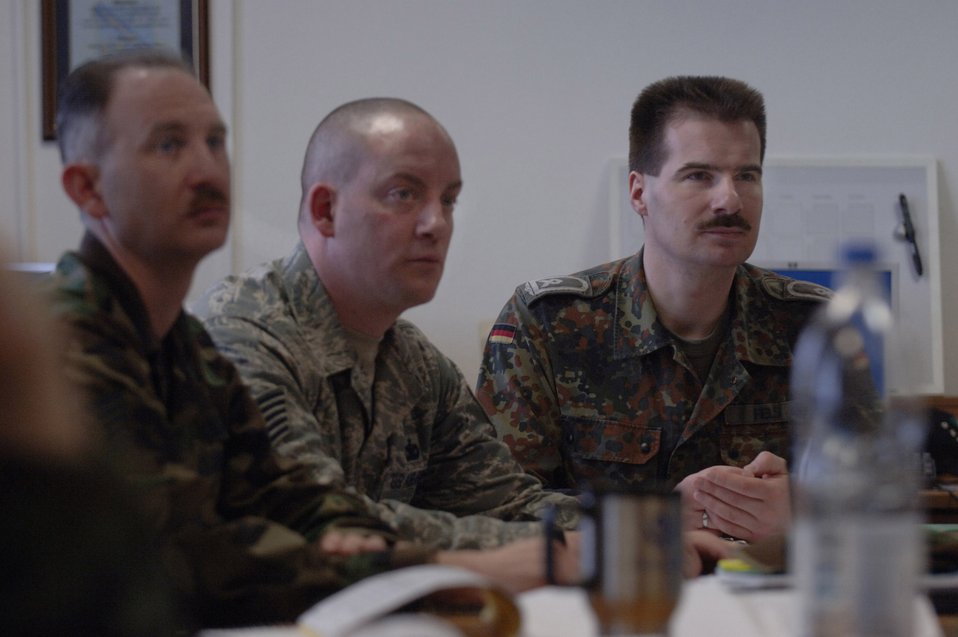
German sergeant enrolls in USAFE NCO Academy

German air force Master Sgt. Holger Fels (right) and Tech. Sgt. Eric Corriveau (center) listen to a lecture about involving subordinates in the process of problem sovling March 26 at the Kisling Noncommissioned Officer Academy at Kapaun Air Station, Germany. Sergeant Fels, a German NCO academy instructor in Appen, Germany, voluntarily enrolled in the six-week course to prepare for his next assignment as an exchange instructor at the Senior NCO Academy at Maxwell Air Force Base, Ala. -- a four-year special duty assignment.